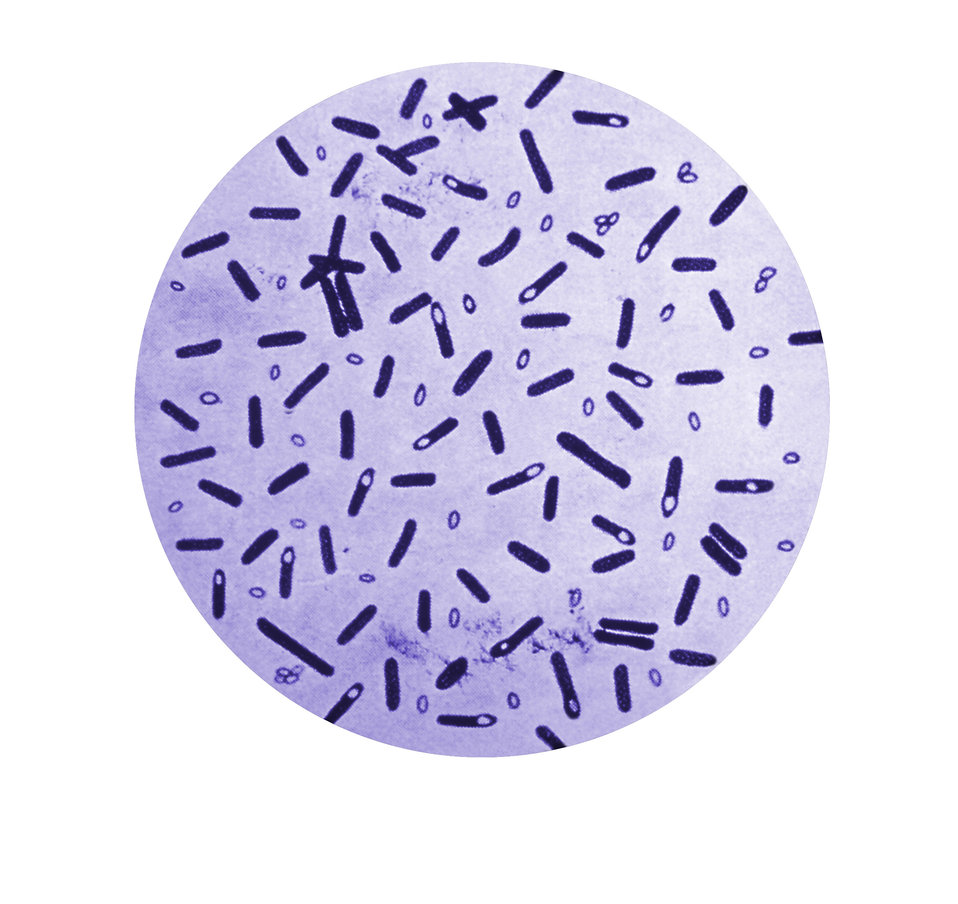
This illustration depicts a photomicrographic view of a gentian violet-stained culture specimen revealing the presence of numerous Gram-positive Clostridium botulinum, formerly known as Bacillus botulinus, bacteria and bacterial endospores.